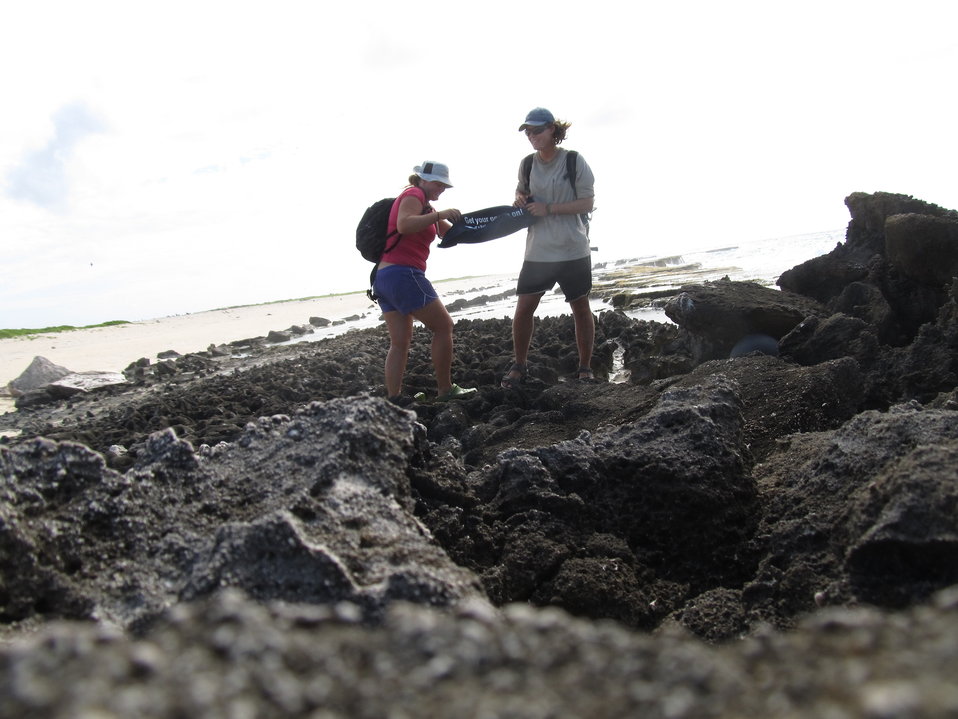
Get Your Goose On! - Laysan Style

Photo taken at Laysan Island in the Papahanaumokuakea Marine National Monument, Hawaiian Islands National Wildlife Refuge. Laysan is located approximately 800 miles northwest of Honolulu, Hawaii and is a remote field camp staffed year round for habitat restoration and population monitoring.